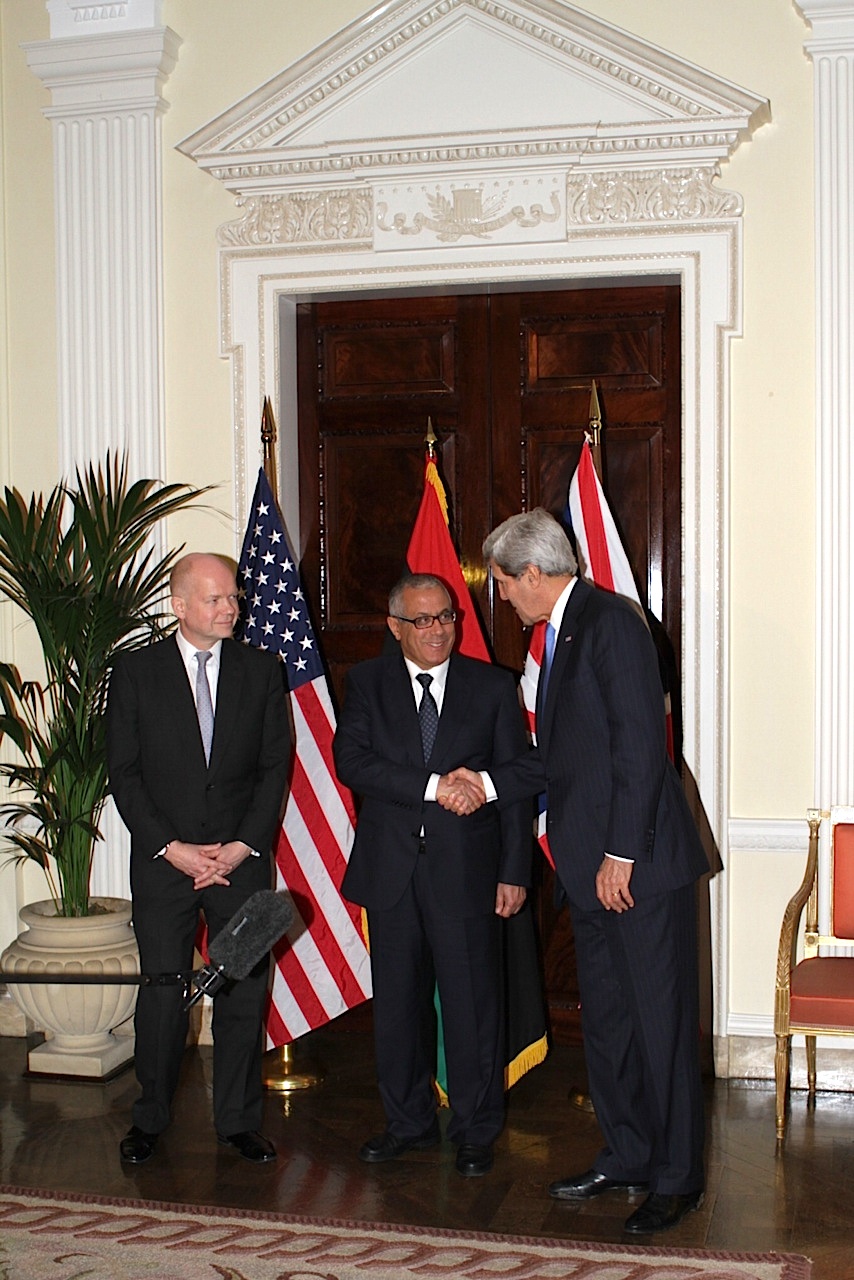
Secretary Kerry, Foreign Secretary Hague Hold News Conference With Libyan Prime Minister Ziedan

U.S. Secretary of State John Kerry speaks as he is joined by British Foreign Secretary William Hague and Libyan Prime Minister Ali Zeidan following a trilateral meeting in London, United Kingdom, on November 24, 2013.